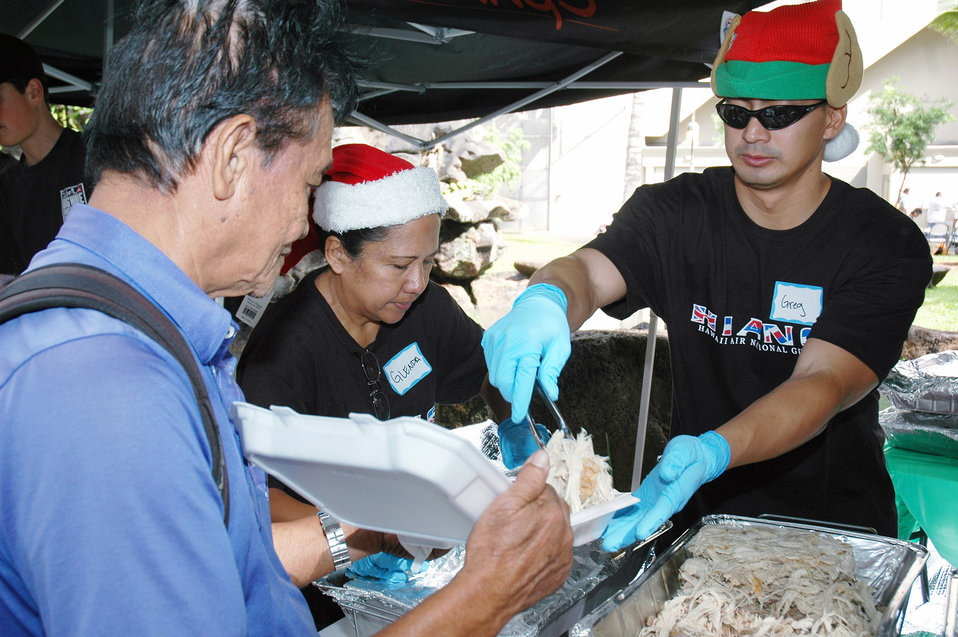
Hawaii's Air Guard feeds underpriviledged

Tech. Sgt. Greg Ramos serves some holiday turkey to one of the guests at Gateway Park in Chinatown on the island of Oahu, Hawaii, Dec. 27. Team Hickam members, the 154th Services Flight and the 15th Services Squadron prepared 40 turkeys and 140 hams during the course of two days for this community event. Sergeant Ramos is the 154th Services Flight assistant readiness chief.